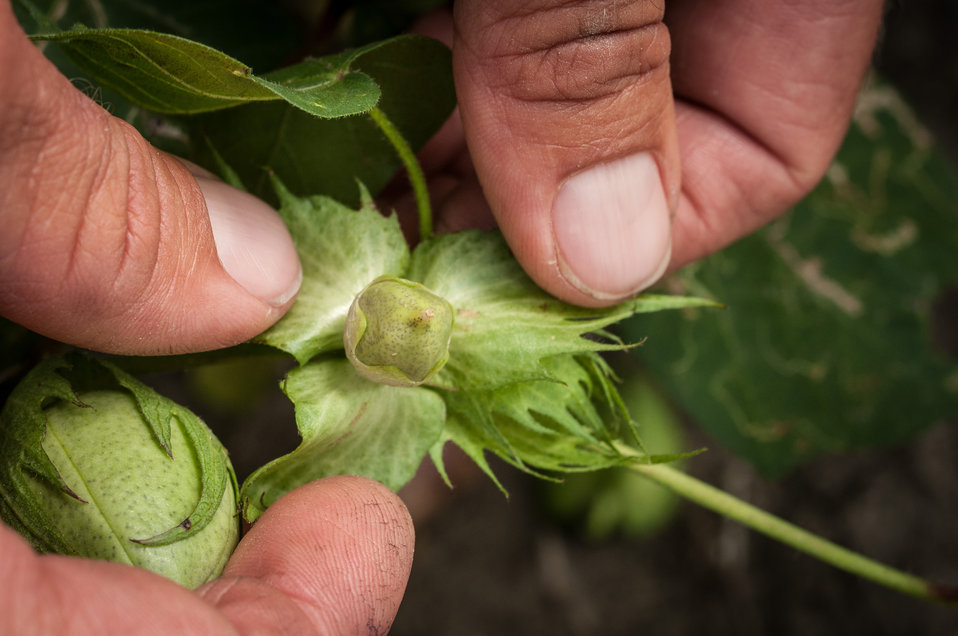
Michael Popp (pronounced Pope) shows cotton plants at various stages of development at Popp Farms 05 El Campo, TX on Jun. 20, 2013. Michael is a junior partner in the 2,400-acre operation, which grows cotton and milo (grain sorghum). The cotton flower starts as a square bud, then a white flower blossoms, turning red, then falls off leaving the boll to grow and eventually opens to reveal the cotton locks, ready to be harvested and processed in a cotton gin. Flowers first occur at the bottom and mature upwards along the plant. The farms are part of the United Agricultural Cooperative, Incorporated.